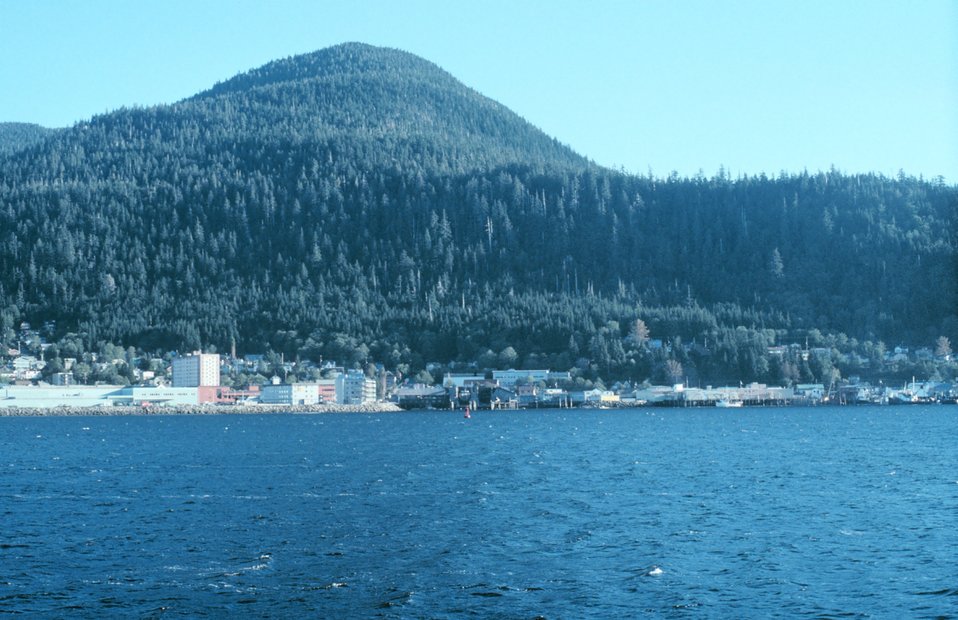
Ketchikan